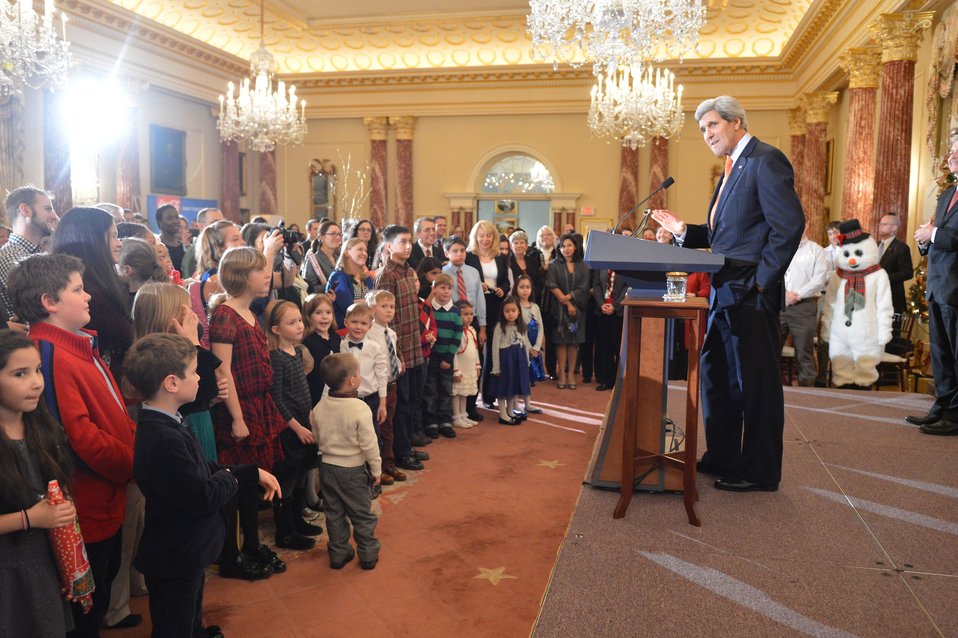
Secretary Kerry Hosts the Unaccompanied Tour Families Holiday Reception

U.S. Secretary of State John Kerry hosts the Unaccompanied Tour Families Holiday Reception at the U.S. Department of State in Washington, D.C., on January 7, 2013. Secretary Kerry said, 'I want you to know how incredibly grateful we are here at the Department, the President, the White House, people in the country for what you do for our nation.'